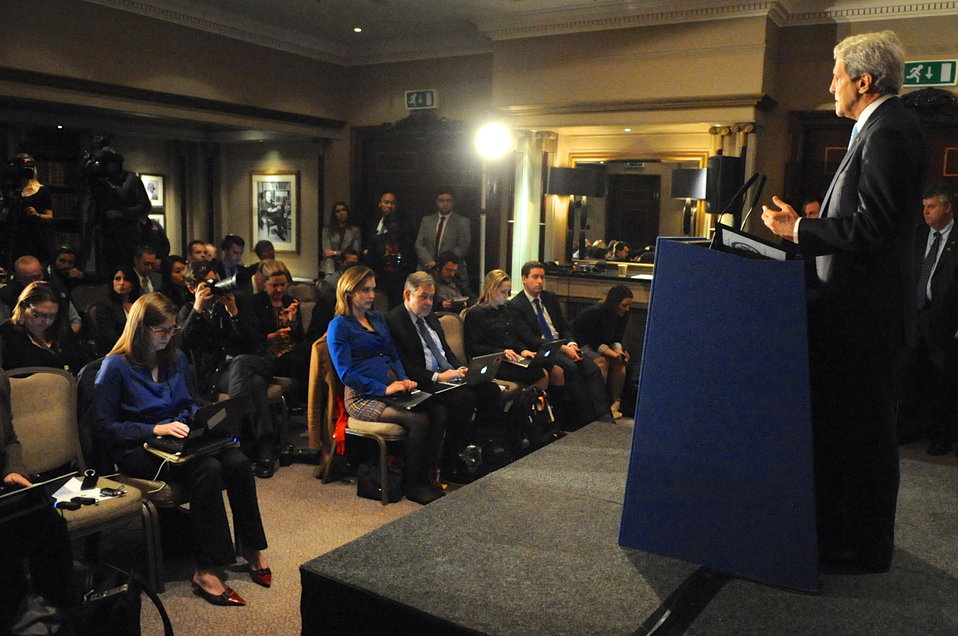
Secretary Kerry Addresses Reporters After Meeting in London With Russian Foreign Minister Lavrov

U.S. Secretary of State John Kerry addresses reporters after a meeting with Russian Foreign Minister Sergey Lavrov focused on deescalating tensions in Ukraine in London, United Kingdom, on March 14, 2014.